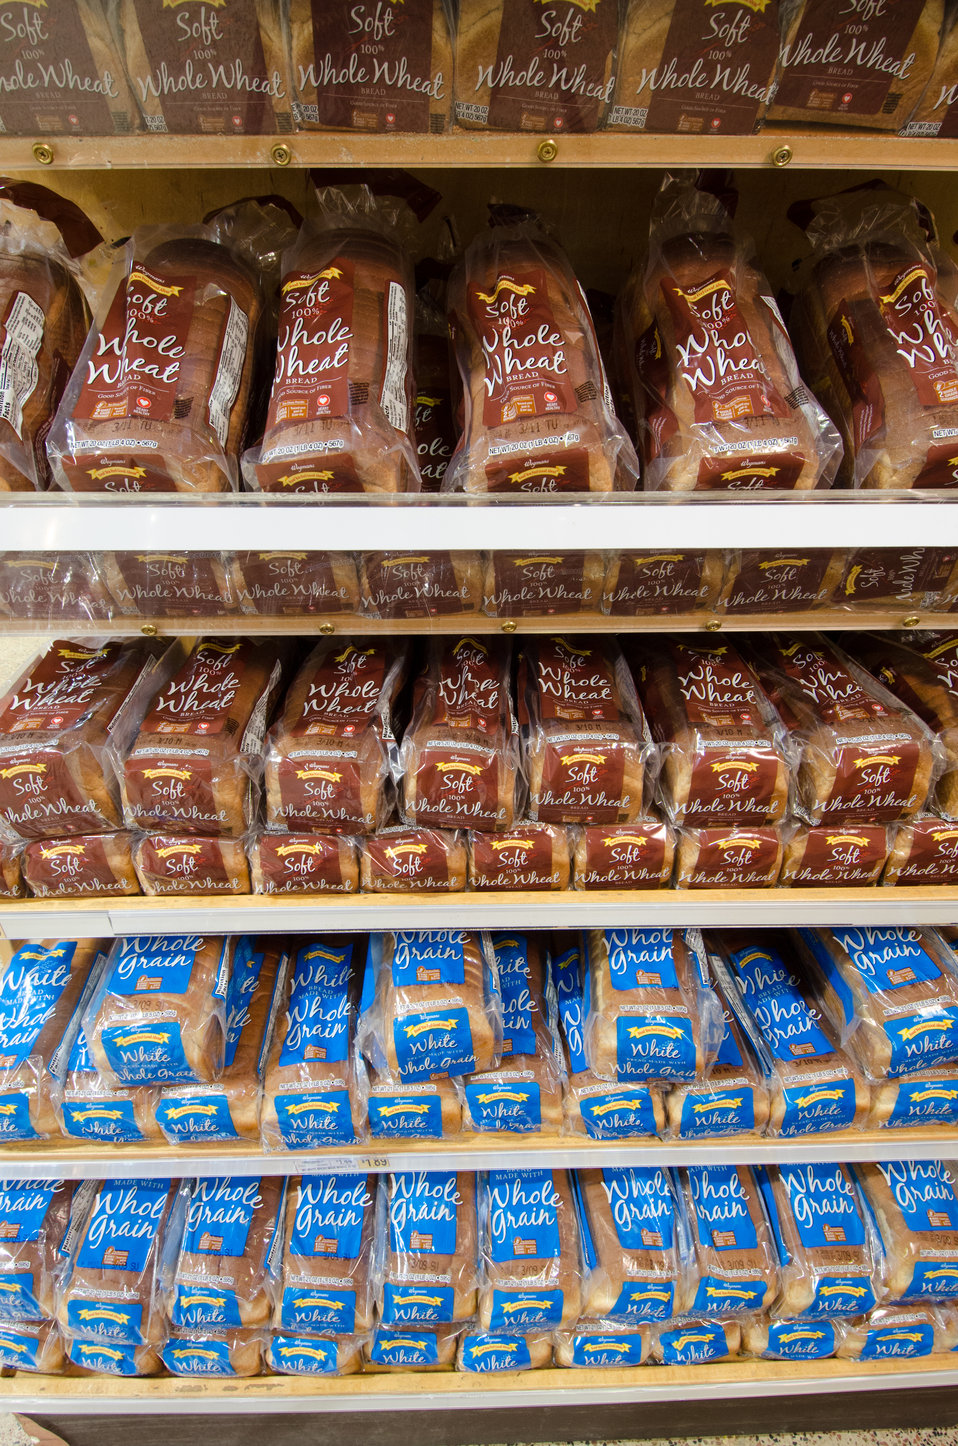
Packaged breads at a grocery store in Fairfax, Virginia, on March 3, 2011.